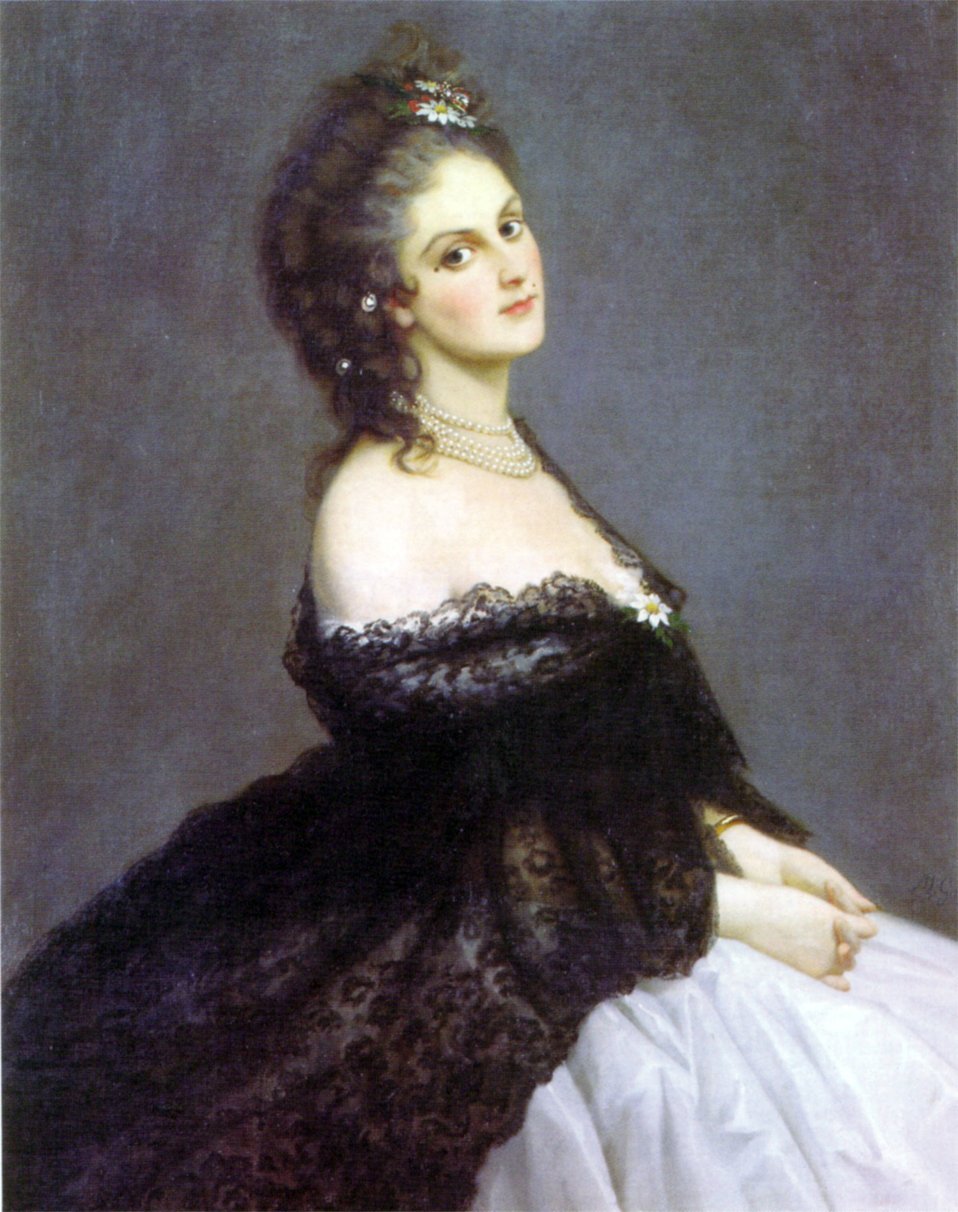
Contessa di Castiglione